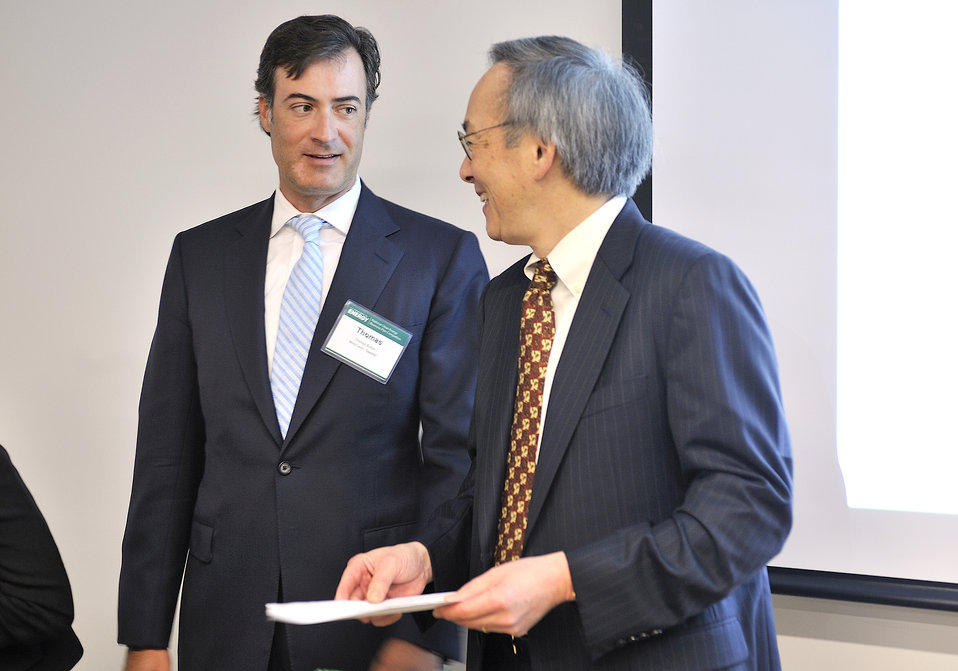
National Clean Energy Business Plan Competition

The National Clean Energy Business Plan Competition inspired nearly 300 university teams across the country to create new businesses to commercialize promising energy technologies developed at U.S. universities and the National Laboratories.